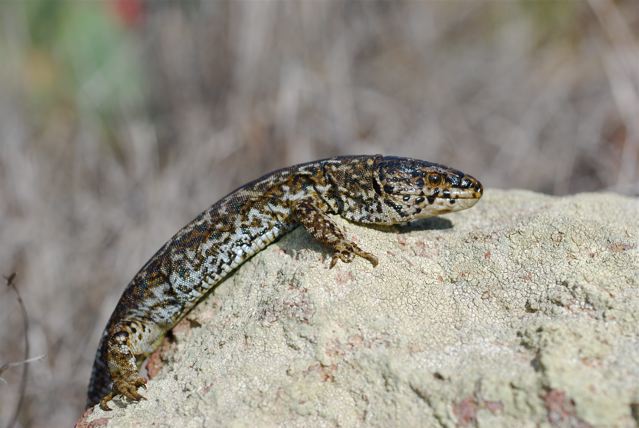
Island night lizard on Rock Side

island night lizards measure about 2.5 to 4 inches long from snout to vent. They live an average of 11-13 years, although some lizards have been documented to be up to 30 years old.